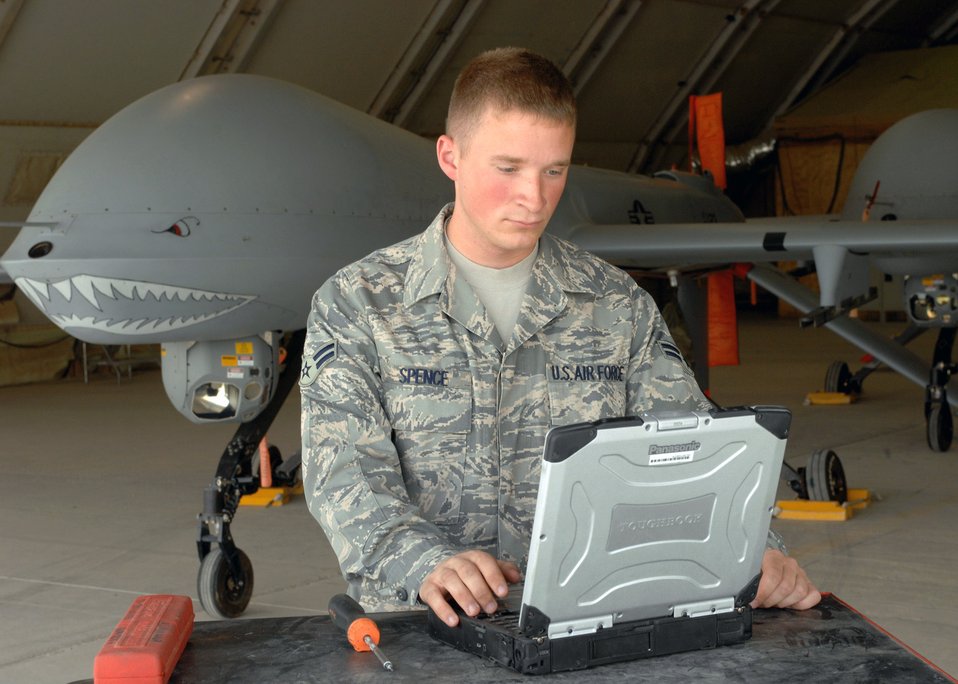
Predators of the mountains

Airman 1st Class Troy Spence, a 62nd Expeditionary Reconnaissance Squadron crew chief, looks over technical data on his laptop while performing maintenance on an MQ-1 Predator at Bagram Air Base, Afghanistan. The unit's primary role is to launch and recover Predators supporting Operation Enduring Freedom. Airman Spence is deployed from the 432nd Aircraft Maintenance Squadron at Creech Air Force Base, Nev.